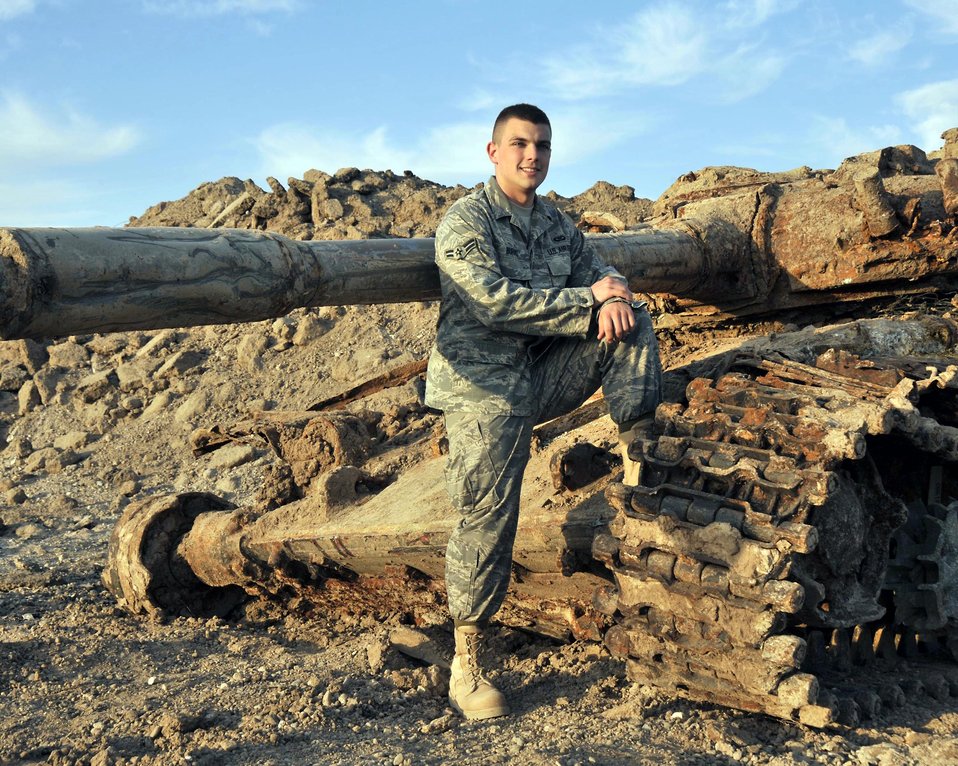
Sather Airmen clear away the debris of war, improve airport safety

Airman 1st Class Thomas Burns is serving on his first deployment to Iraq, and is an airfield management operations coordinator assigned to the 447th Expeditionary Operations Support Squadron at Sather Air Base, on the west side of Baghdad International Airport. He is responsible for discovering this Iraqi T-72 Main Battle Tank that was burried near the runway. The tank posed a threat to the safety of the airfield, and was removed by a combined Air Force and Army effort.